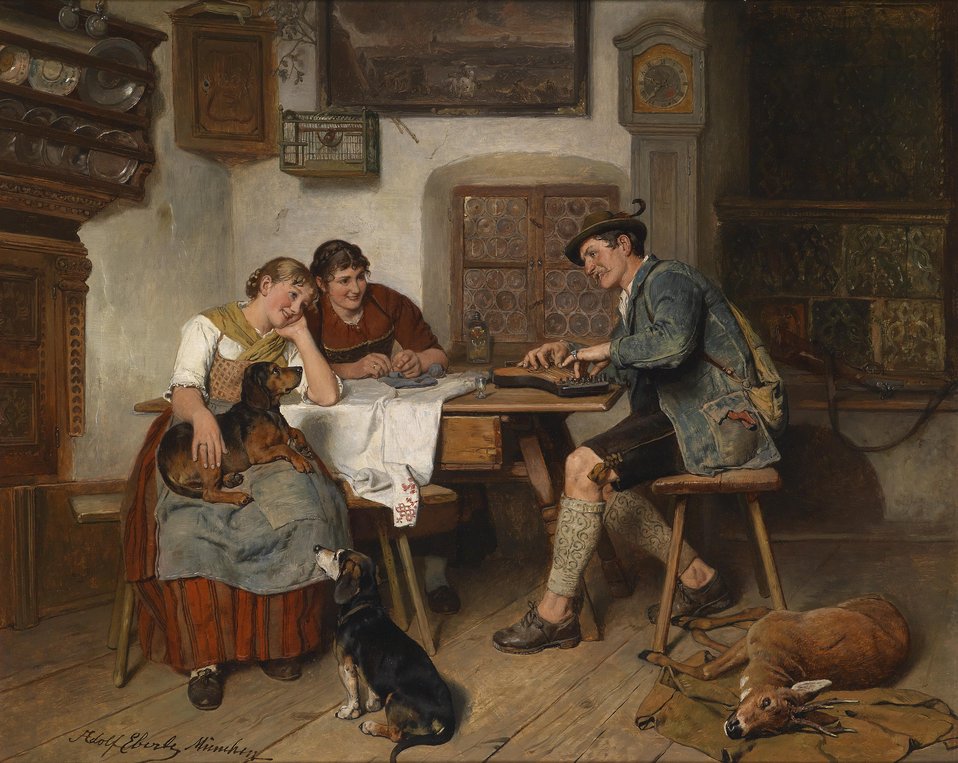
Deutsch: Musikalische Unterhaltung auf der Alm, signiert, bezeichnet Adolf Eberle München, Öl auf Holz, 53 x 99 cm